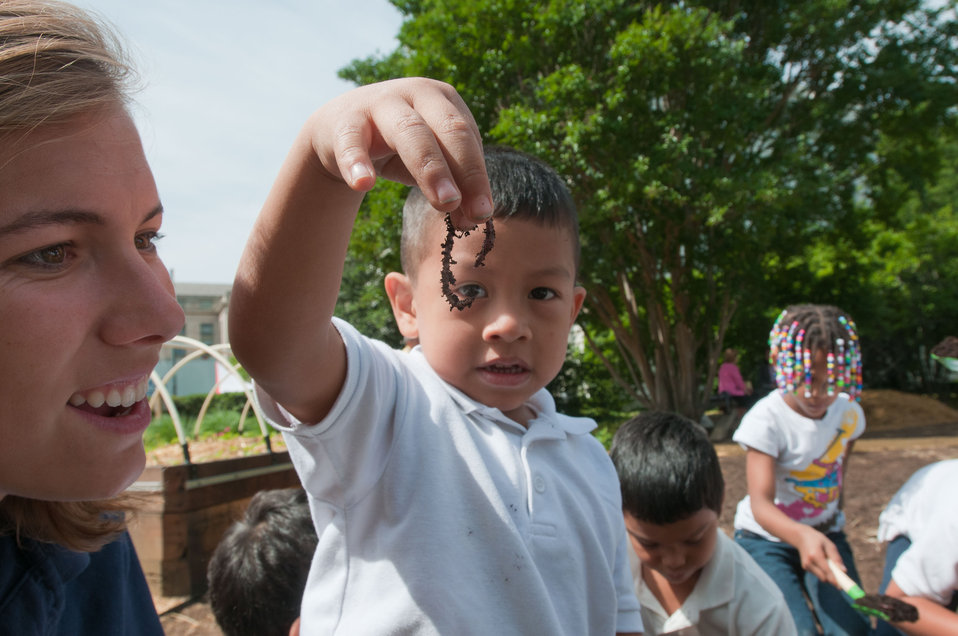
A student learns about the importance and cultivation of worms during the opening day of the USDA Farmers Market and the official kick off of the People's Garden activities on Friday, June 3, 2011 in Washington, DC. The adjacent USDA Farmers Market is located at the corner of 12th Street and Independence Avenue and will be open every Friday from 10:00 a.m. - 2:00 p.m. through November 18th. Special events will be happening every Friday at the market and at the People's Garden all season.